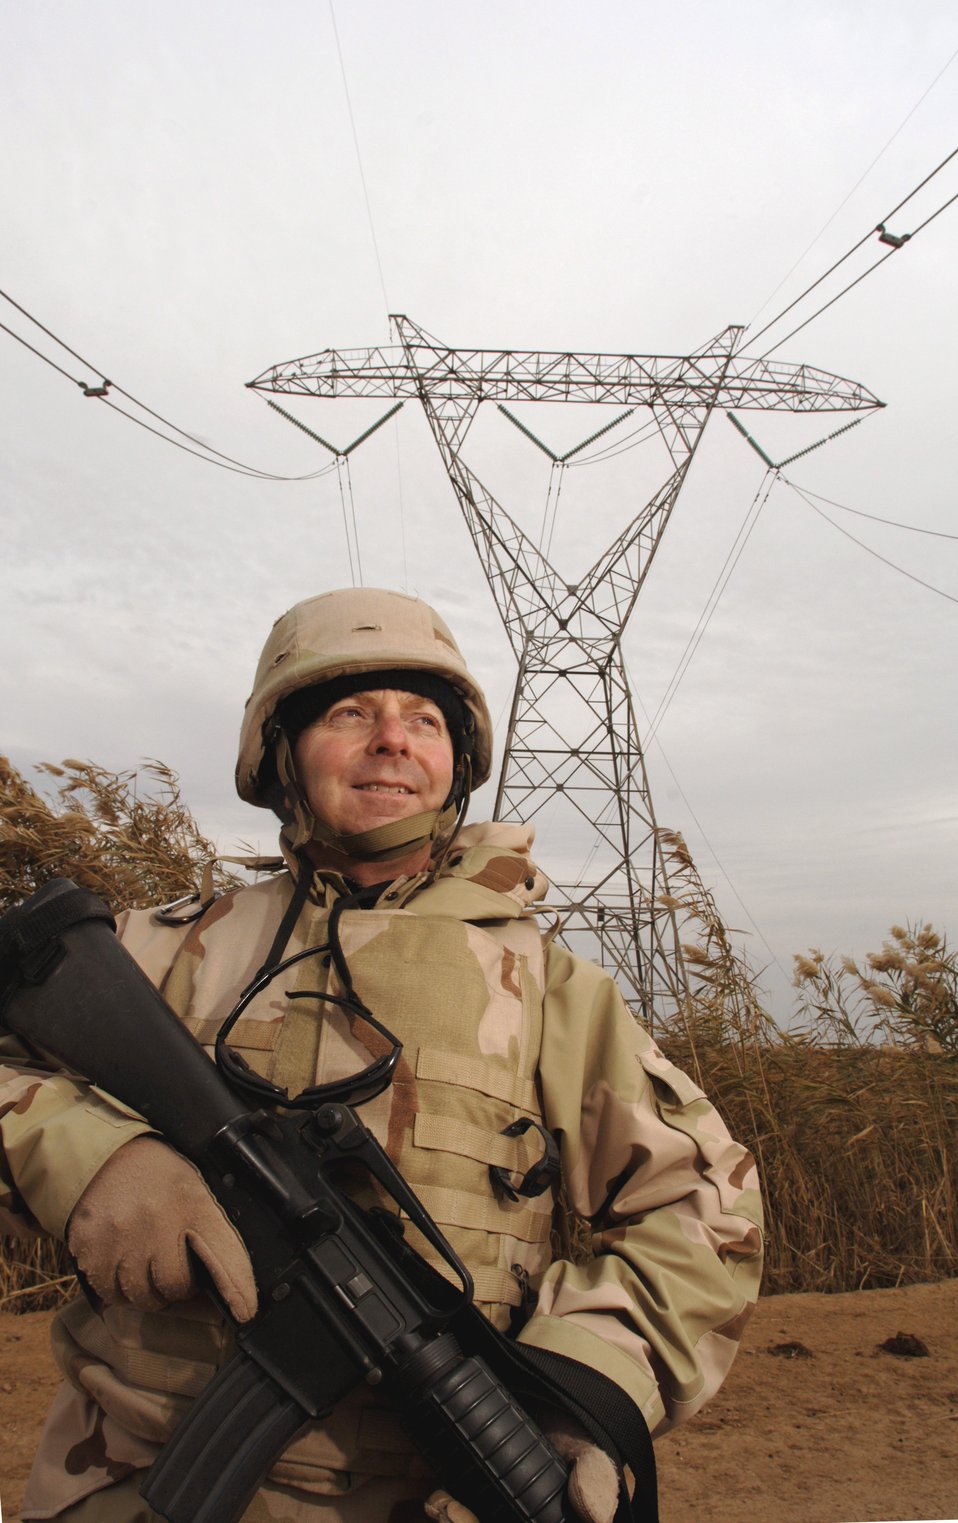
Infrastructure inspection

KIRKUK, Iraq (AFPN) -- Chief Master Sgt. Paul Kaplan inspects 400-megavolt power lines from the ground. The lines lost power after several towers were toppled at a pipeline canal crossing a few miles away. Chief Kaplan is a POInT member in charge of electricity. In his region, he aids the forward movement of the national power grid, which includes four major power plants. He is with the 732nd Expeditionary Civil Engineer Squadron here and deployed from the 60th Civil Engineering Squadron at Travis Air Force Base, Calif.